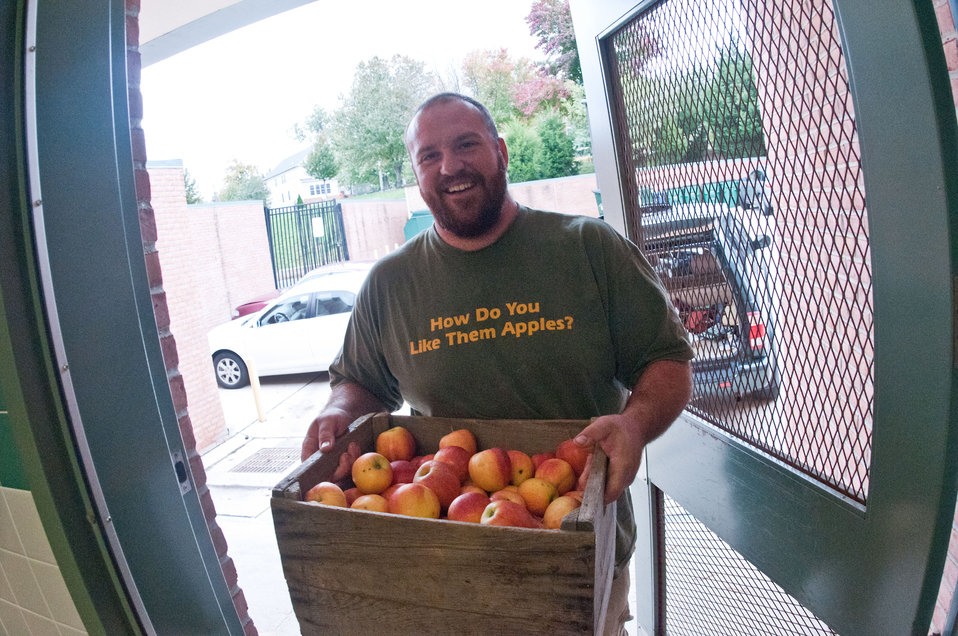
Bigg Riggs Farm owner Calvin Riggleman brought three varieties of apples to Nottingham Elementary School in Arlington, VA, for a National School Lunch Week event on Wednesday, October 12, 2011. Farmers from Bigg Riggs Farm in Hampshire County, WV, and Maple Avenue Market Farm in Vienna, VA were very popular with the students. Today's menu included roasted chicken, roasted butternut squash with dried cranberries, farm fresh mixed lettuce salad, turkey wraps, pita wedges, hot muffins, carrots, Asian pears and more.